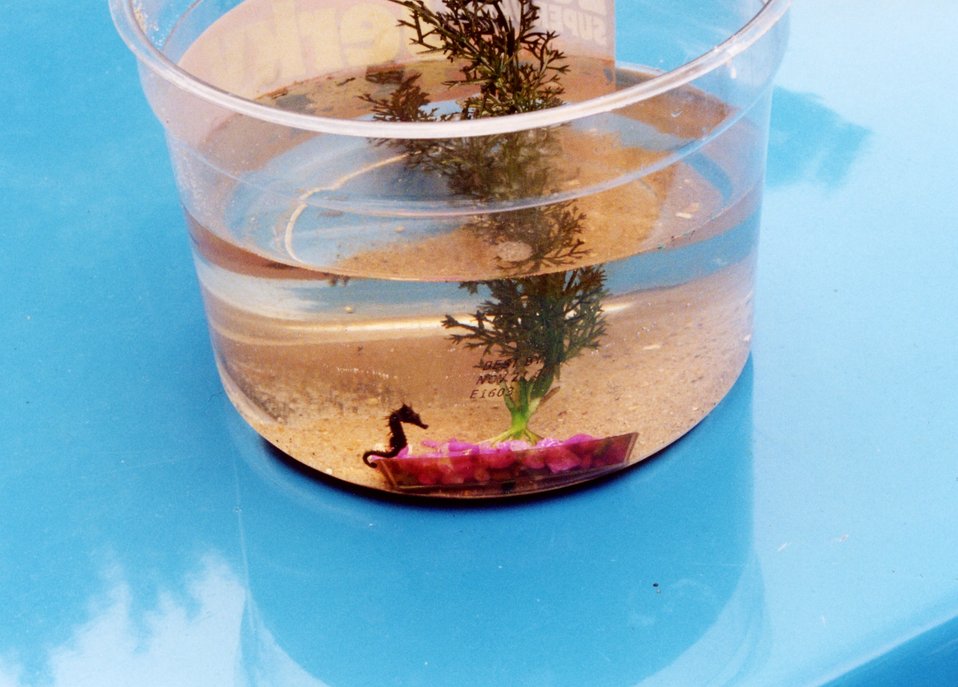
Young seahorse found in the Patuxent River.